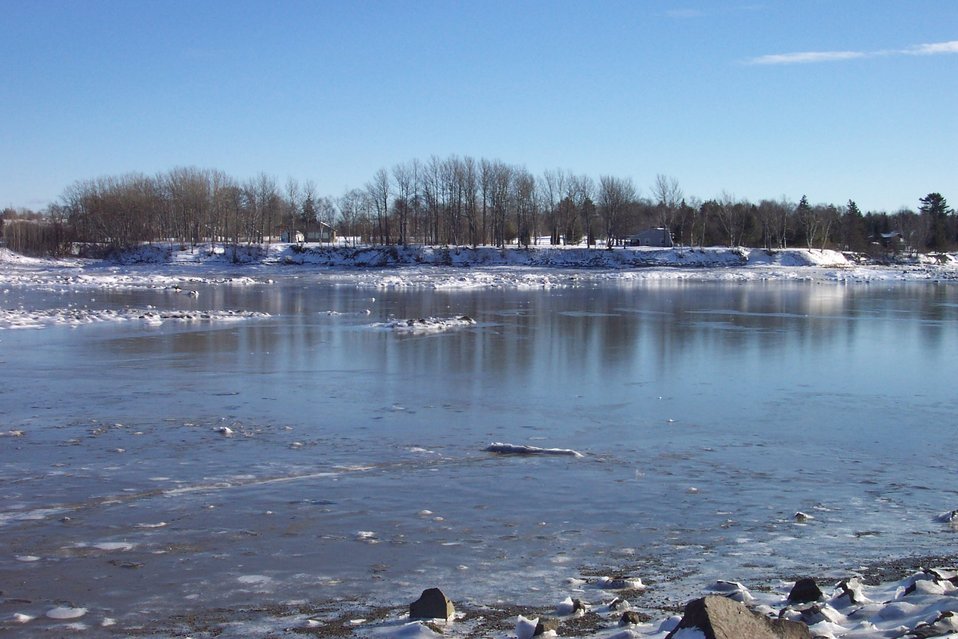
A frozen arm of Penobscot Bay near South Thomaston.